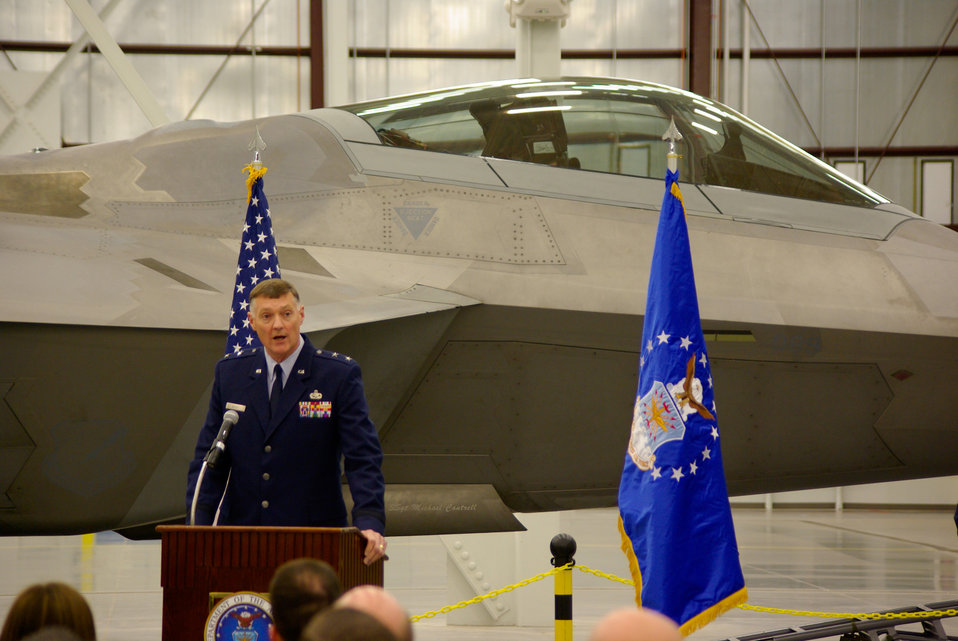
F-22 heavy maintenance facility at Hill Air Force Base

U.S. Air Force Maj. Gen. Andrew Busch, commander of the Ogden Air Logistics Center, speaks during a ribbon-cutting ceremony Jan. 12, 2012 for the new F-22 heavy maintenance facility at Hill Air Force, Utah. The U.S. Army Corps of Engineers Sacramento District oversaw construction of the $45 million, 96,000-square-foot facility; the second and final phase of a two-phase complex on the base. The first phase, a $39.2 million facility, was completed in August 2010.